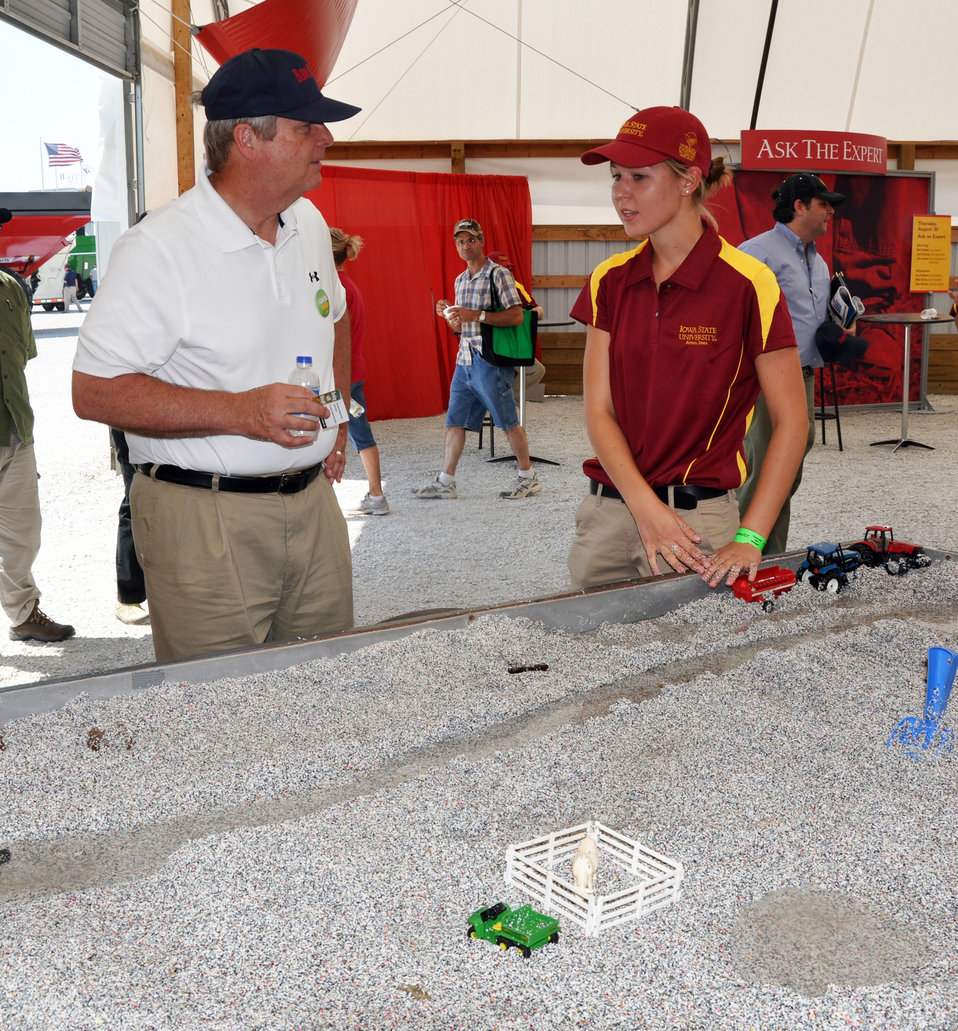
Agriculture Secretary Tom Vilsack visits with Iowa State University student Allison Vincent of Perry, Iowa, at the ISU tent during the 2012 Farm Progress Show in Boone, Iowa, on Aug. 30, 2012. Vincent talked to Vilsack about stream corridors.USDA photo by Jason Johnson.